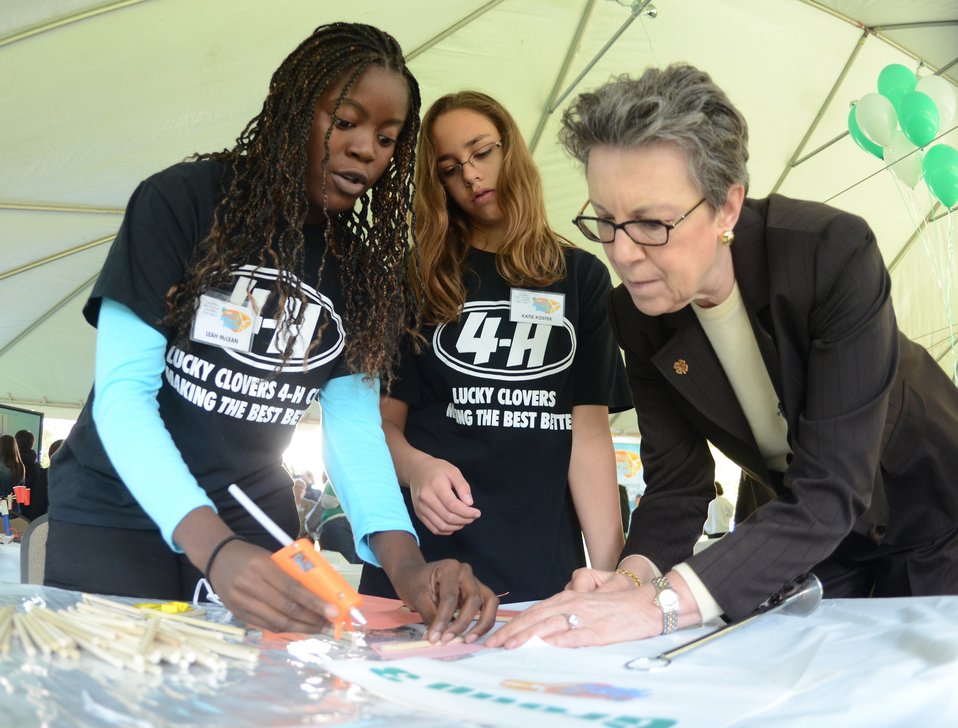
Leah McLean (l.) and Katie Koster (c.) “Lucky Clover” mentors, show U.S. Department of Agriculture Research, Education and Economics Under Secretary Dr. Catherine Woteki (r.), how “Lucky Clovers” such as them, will teach wind generator blade construction and blade disk assembly to 150 children from Virginia and Maryland, participating in the 4-H Youth Science Day event “Wired for Wind” at the National 4-H Conference Center in Chevy Chase, MD, on Wednesday, October 5, 2011.